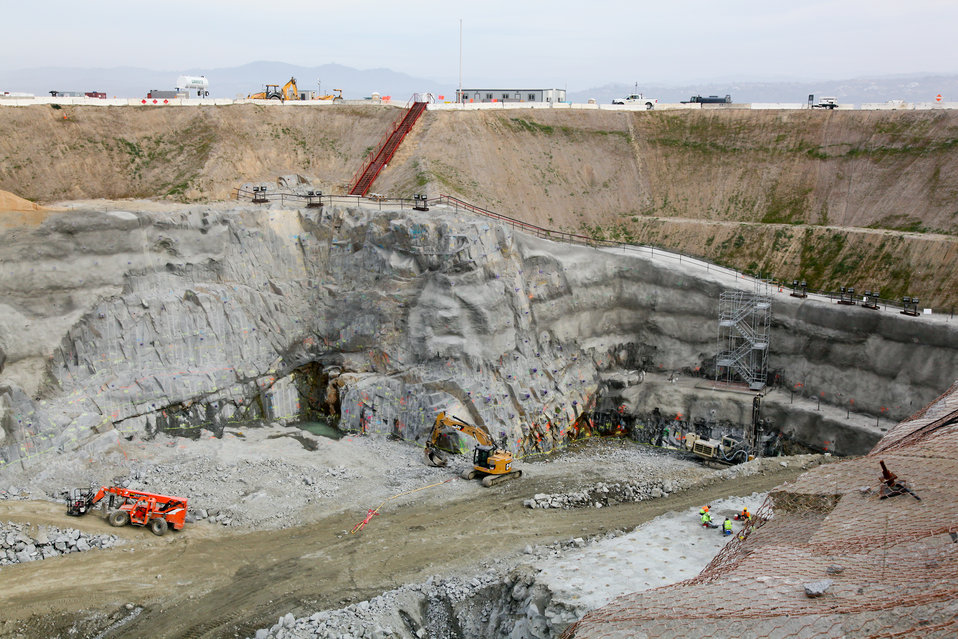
Excavation and rock reinforcement continues at Folsom Joint Federal Project

Excavation of Folsom Dam’s new auxiliary spillway continues in Folsom, Calif., Dec. 29, 2011. The spillway will allow Folsom Dam to release water sooner and more safely. The project is part of the Folsom Dam Joint Federal Project, a joint effort of the U.S. Army Corps of Engineers Sacramento District, the U.S. Bureau of Reclamation, the Central Valley Flood Protection Board and the Sacramento Area Flood Control Agency to improve the safety of the dam and reduce flood risk for the greater Sacramento area.